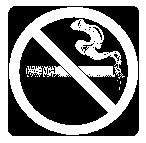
No smoking sign, small.